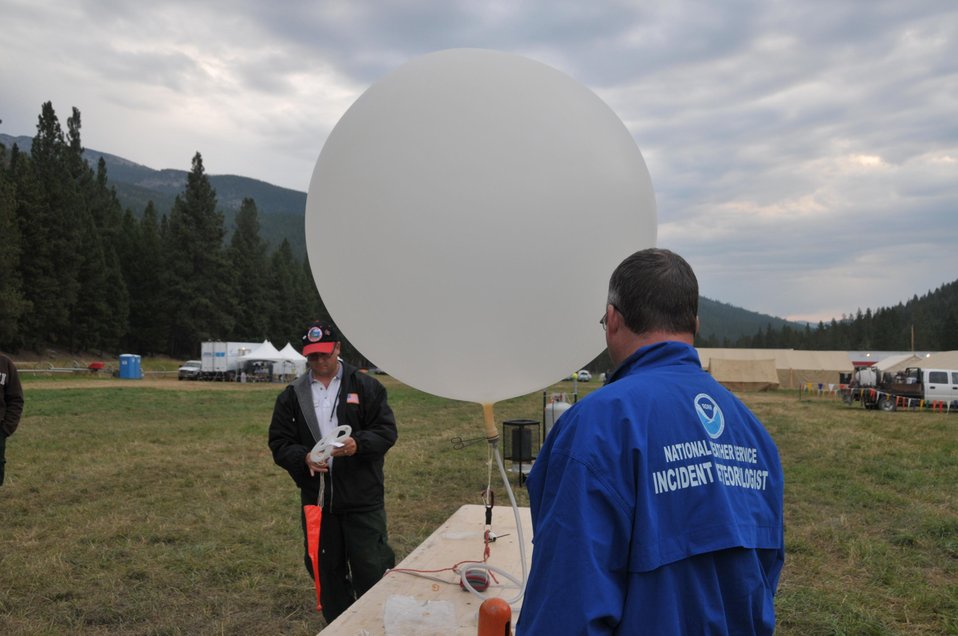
Incident Meteorologists Phillip Manuel and Tim Sedlock of the National Weather Service getting ready to launch a weather balloon to determine instability of the air mass with predicted Red Flag warning with afternoon thunderstorms at the Gold Pan Fire. The Gold Pan Fire in the Bitterroot National Forest near Conner, MT began by lightning on Jul. 16, 2013 by lighting have consumed approximately 17,163 acres.